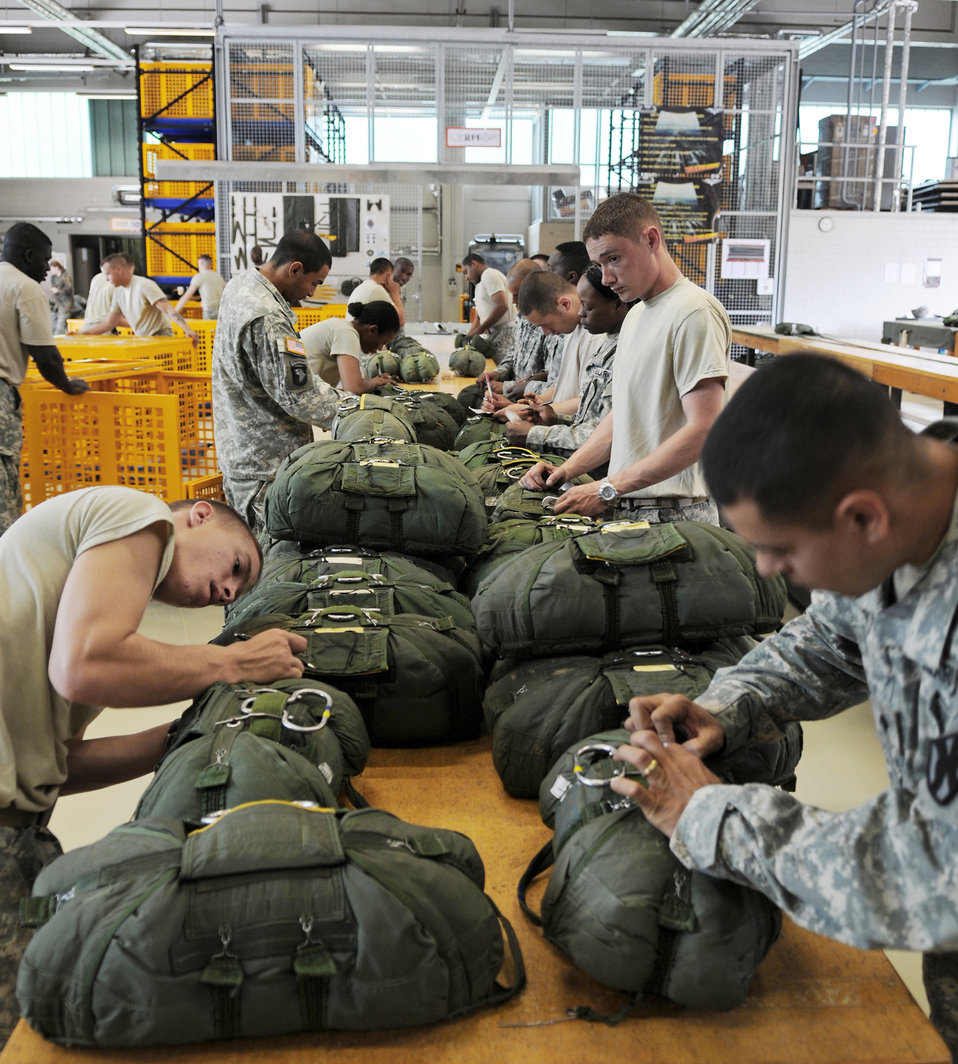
5 NATO countries take part in jump week

Army Pvt. Chayenne Kodiak (left) and Army Spc. Eric Meneses rig parachutes for future use Aug. 13 at Rhine Ordnance Barracks, Germany. U.S. Soldiers and Airmen performed a combined airborne jump with four other NATO countries during International Jump Week.